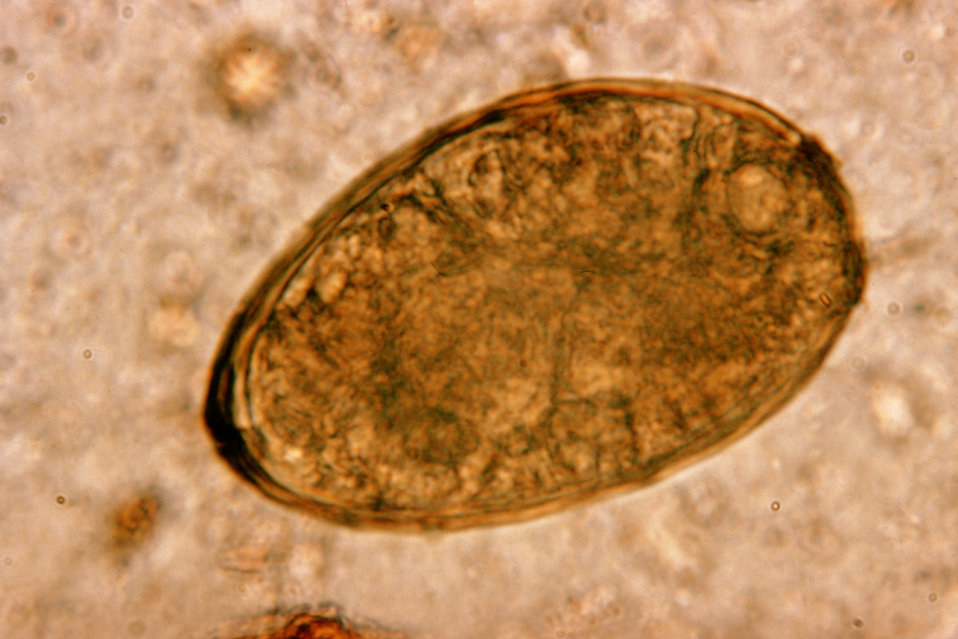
This micrograph depicts an egg from the trematode parasite Paragonimus westermani.